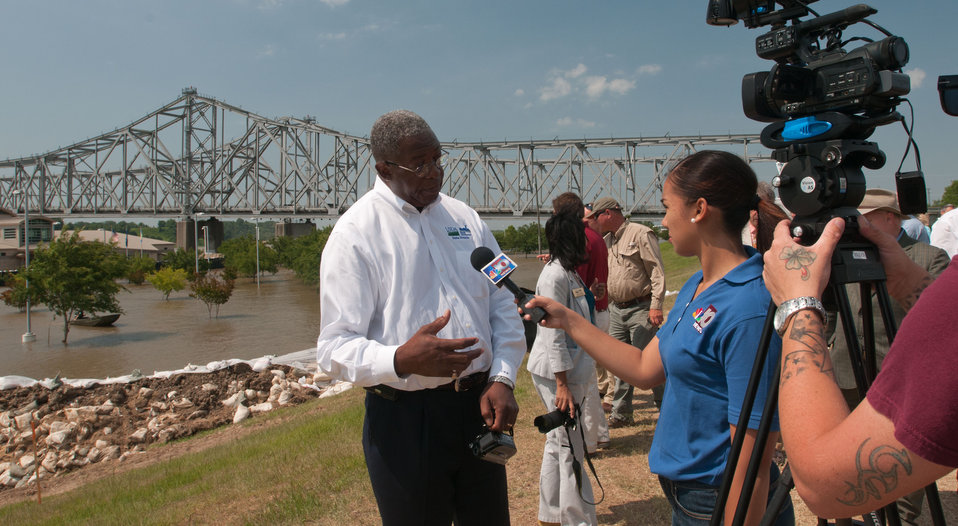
U.S. Department of Agriculture Louisiana State Director Clarence W. Hawkins is interviewed on the Mississippi River levee at Vidalia, LA, on Thursday, May 19, 2011. In the background is the Natchez–Vidalia Bridge which connects Natchez, Mississippi and Vidalia.